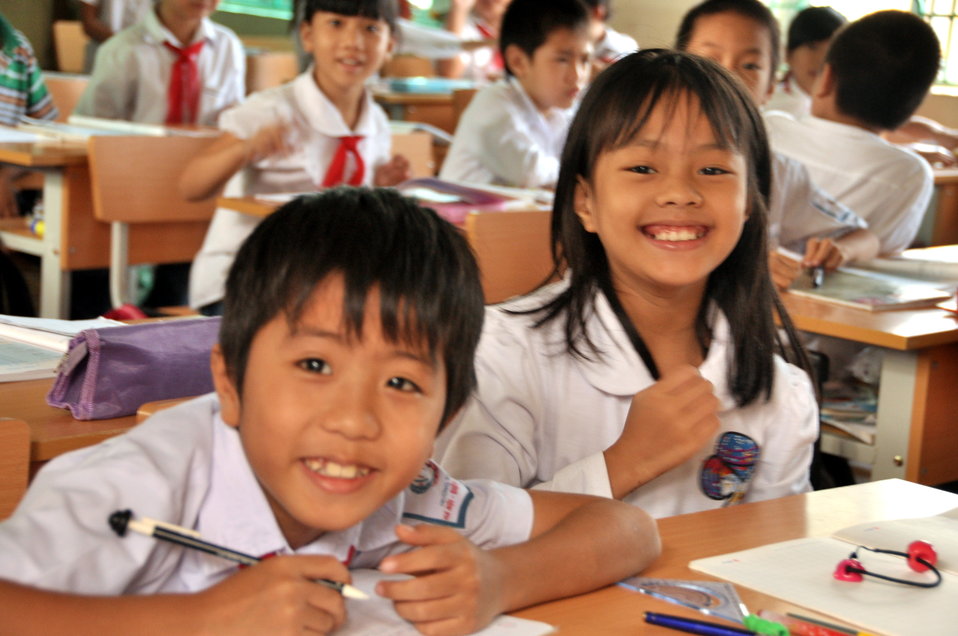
School children receive a dose of deworming medicine in Dien Bien

October 31, 2012